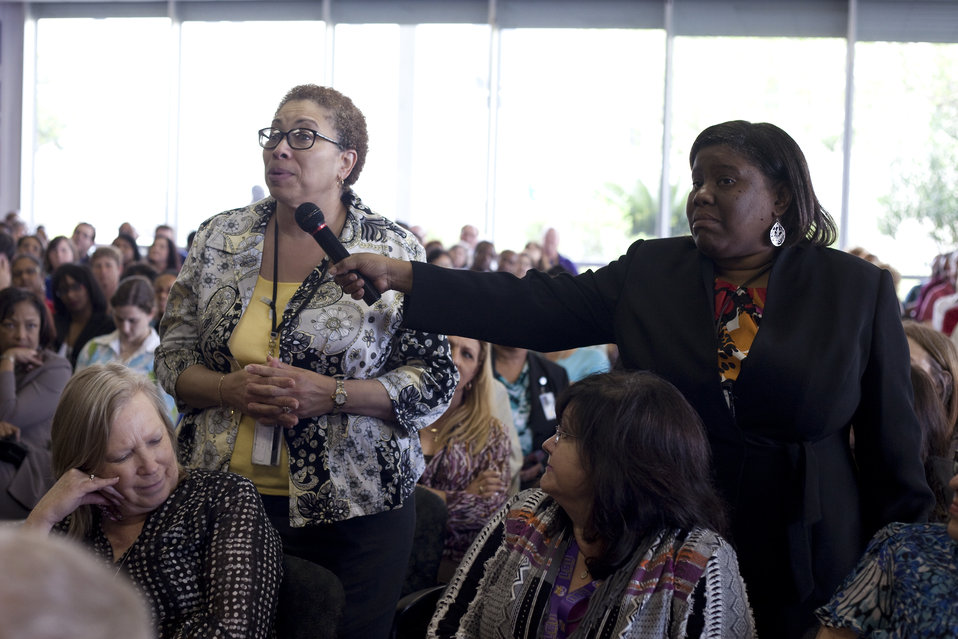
Agriculture Secretary Tom Vilsack spoke to employees at the National Finance Center in New Orleans, LA on Wednesday, May 1, 2013. Government employees services division representative Helen Young asks a question of Secretary Vilsack during his time with the group.